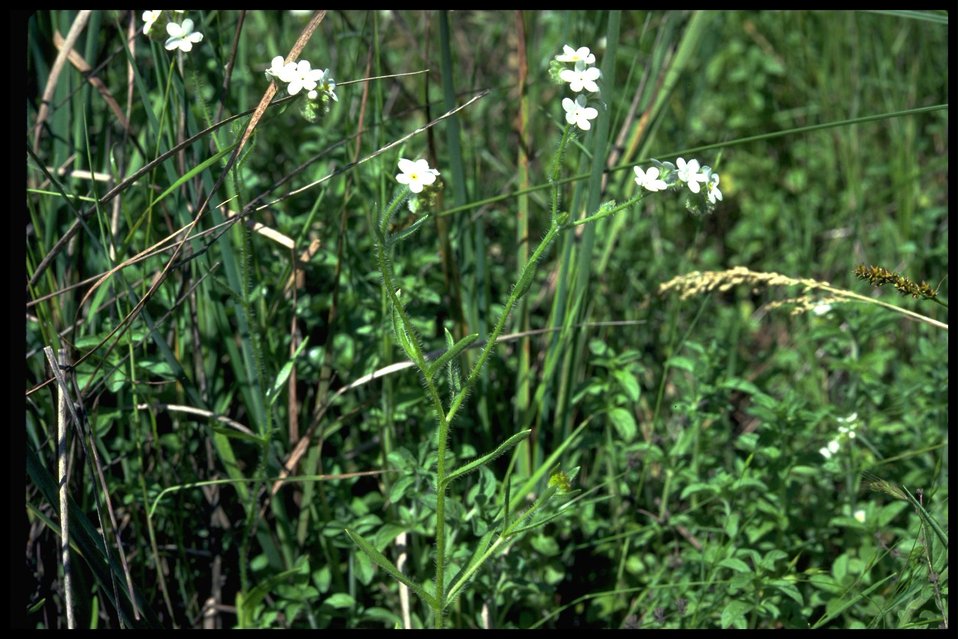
Farshot of rough popcorn flower (Plagiobothrys hirtus).